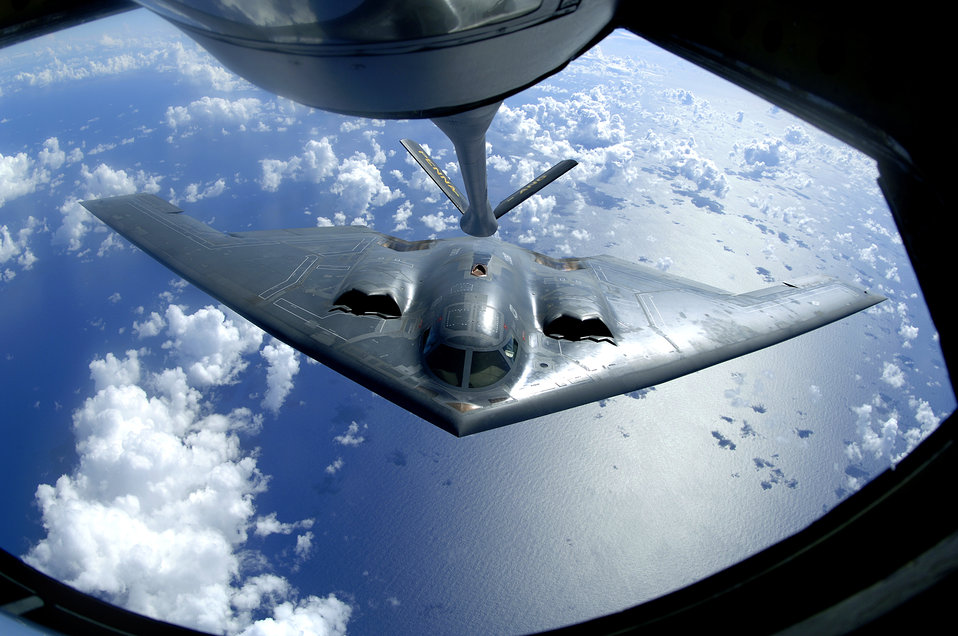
Over the Pacific

A B-2 Spirit moves into position for refueling from a KC-135 Stratotanker over the Pacific Ocean on Tuesday, May 30, 2006. The B-2 is from the 509th Bomb Wing at Whiteman Air Force Base, Mo., and the KC-135 is from the Pennsylvania Air National Guard's 171st Air Refueling Wing at the Pittsburgh International Airport. The bomber is part of Pacific Command's continuous bomber presence in the Asia-Pacific region.